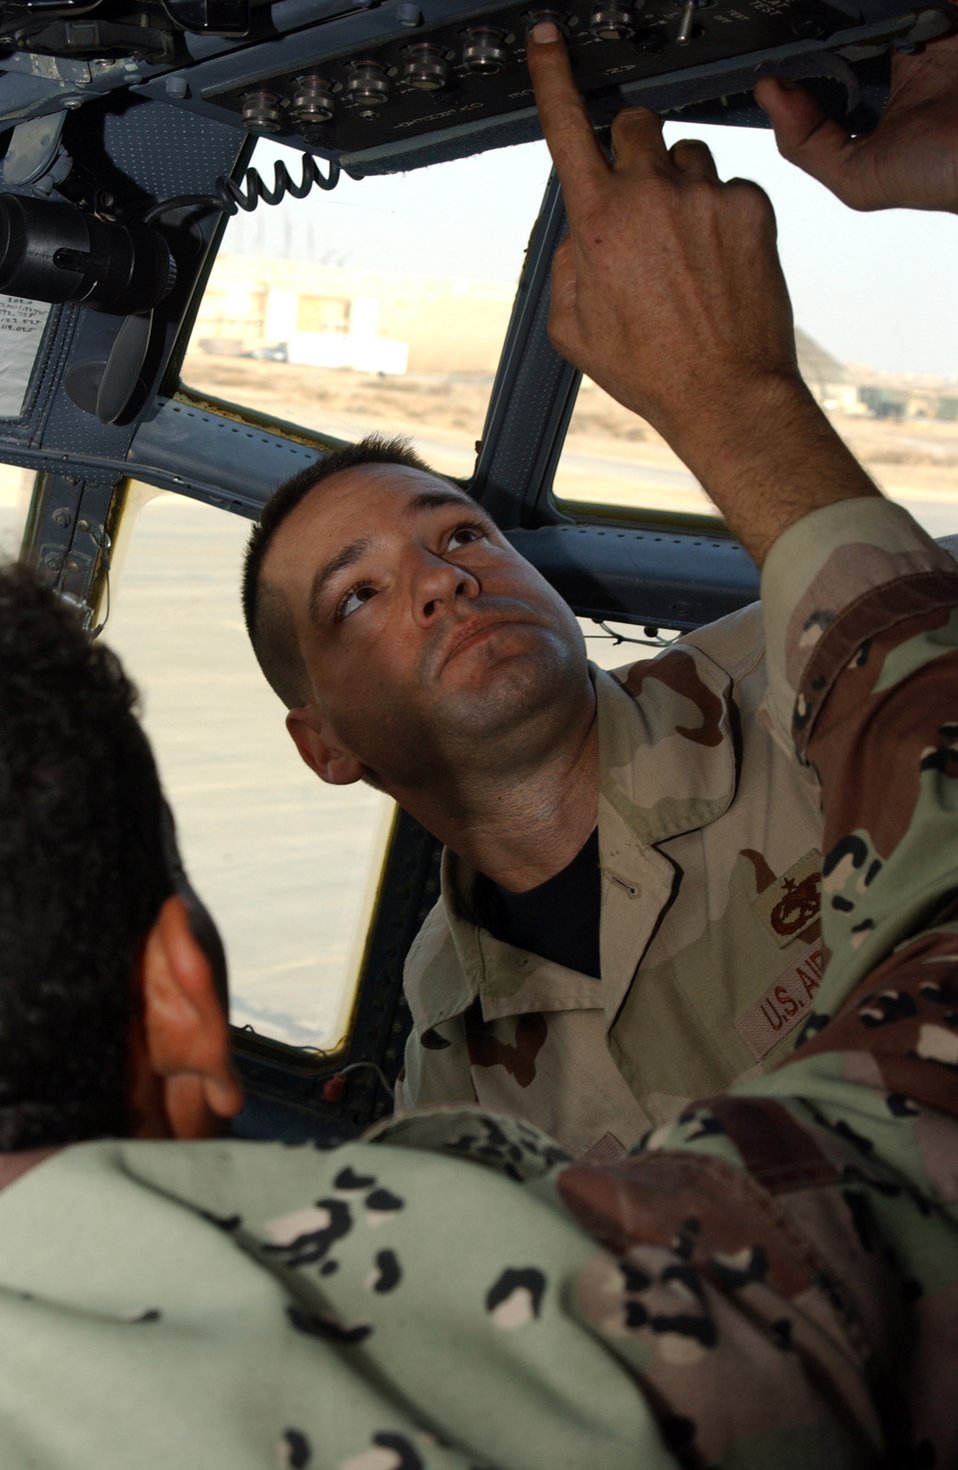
Iraqi Air Force

ALI BASE, Iraq (AFPN) -- Tech. Sgt. Charles Francks, helps one of his propulsion students. They are checking cockpit indicators and switches related to engine information and operation. Sergeant Franks has four students in his engine section. Advisory support team instructors of the 777th Expeditionary Airlift Squadron are scheduled to relocate to the new home of the Iraqi Air Force Squadron 23 (Transport) at New Al Muthana Air Base, Baghdad International Airport within the next few weeks. Sergeant Francks is deployed from the 86th Maintenance Squadron at Ramstein Air Base, Germany.